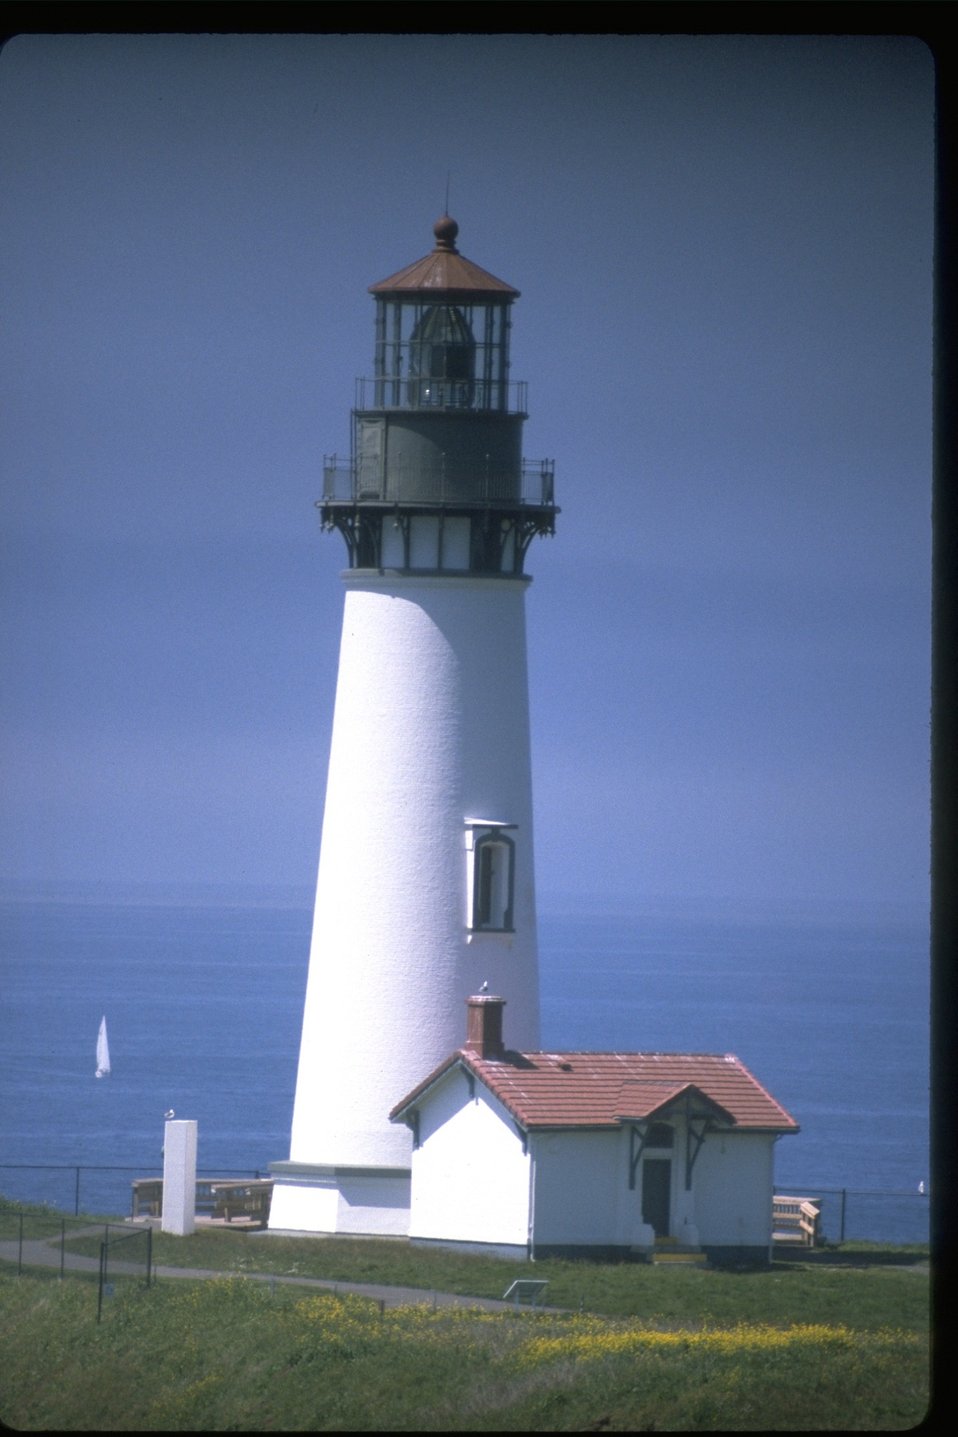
Vertical shot of Yaquina Head lighthouse with a sailboat off shore.